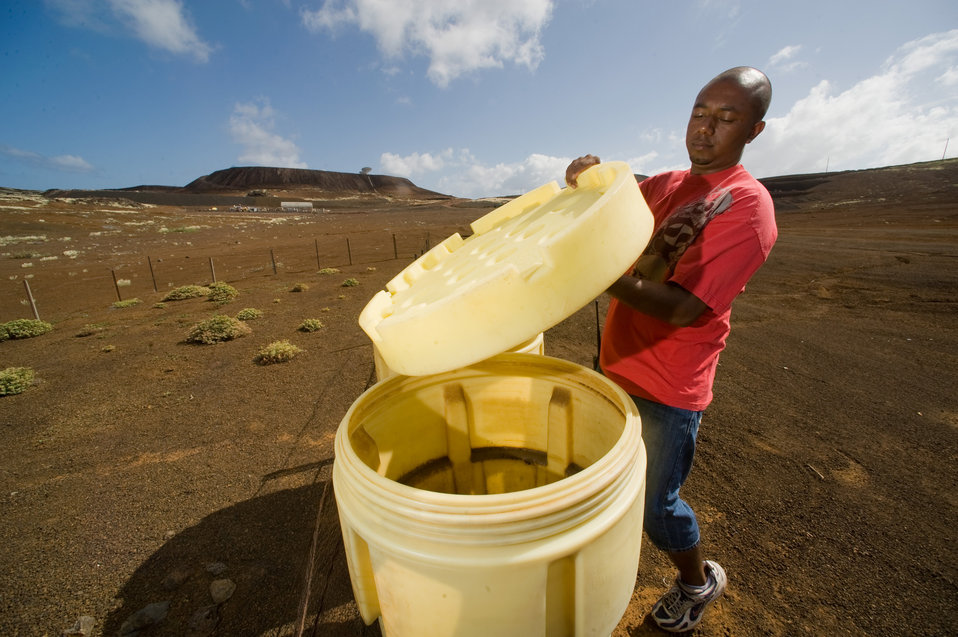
Robert's Plants

Robert Yon takes a break from a busy day to draw some water from a barrel and hand water some Ascension Spurge (E. origanoides), an endangered species of plant found only on the Ascension Island, predominantly on the property used by the 45th Operations Group, Detachment 2, Ascension Auxiliary Airfield (AAF), in the South Atlantic Ocean. Mr. Yon a certified environmental technician works with 13 protocols of engineering and the environment. Some of those are hazardous waste and PCB protocols. The small plot of land he cultivates supports seed collection by a British conservation organization on the island. Although, all U.S. Air Force bases have environmental programs, this small remote island environment allows easy observation of the efforts supporting the endangered spurge plant and self-sufficient water, power and waste programs.